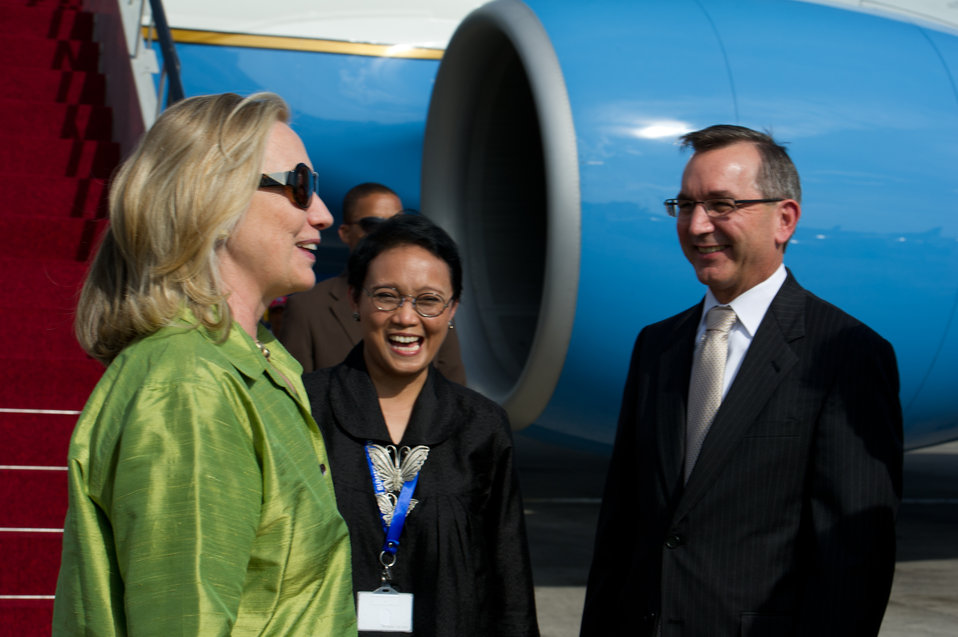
Secretary Clinton Speaks With Indonesian Foreign Ministry Director General Marsudi and Ambassador Marciel

U.S. Secretary of State Hillary Rodham Clinton, left, speaks with Indonesian Foreign Ministry Director General Ms. Retno Marsudi, center, and U.S. Ambassador to Indonesia Scot Marciel, right, upon her arrival to Bali, Indonesia, for the ASEAN and East Asian Summits on November 17, 2011.